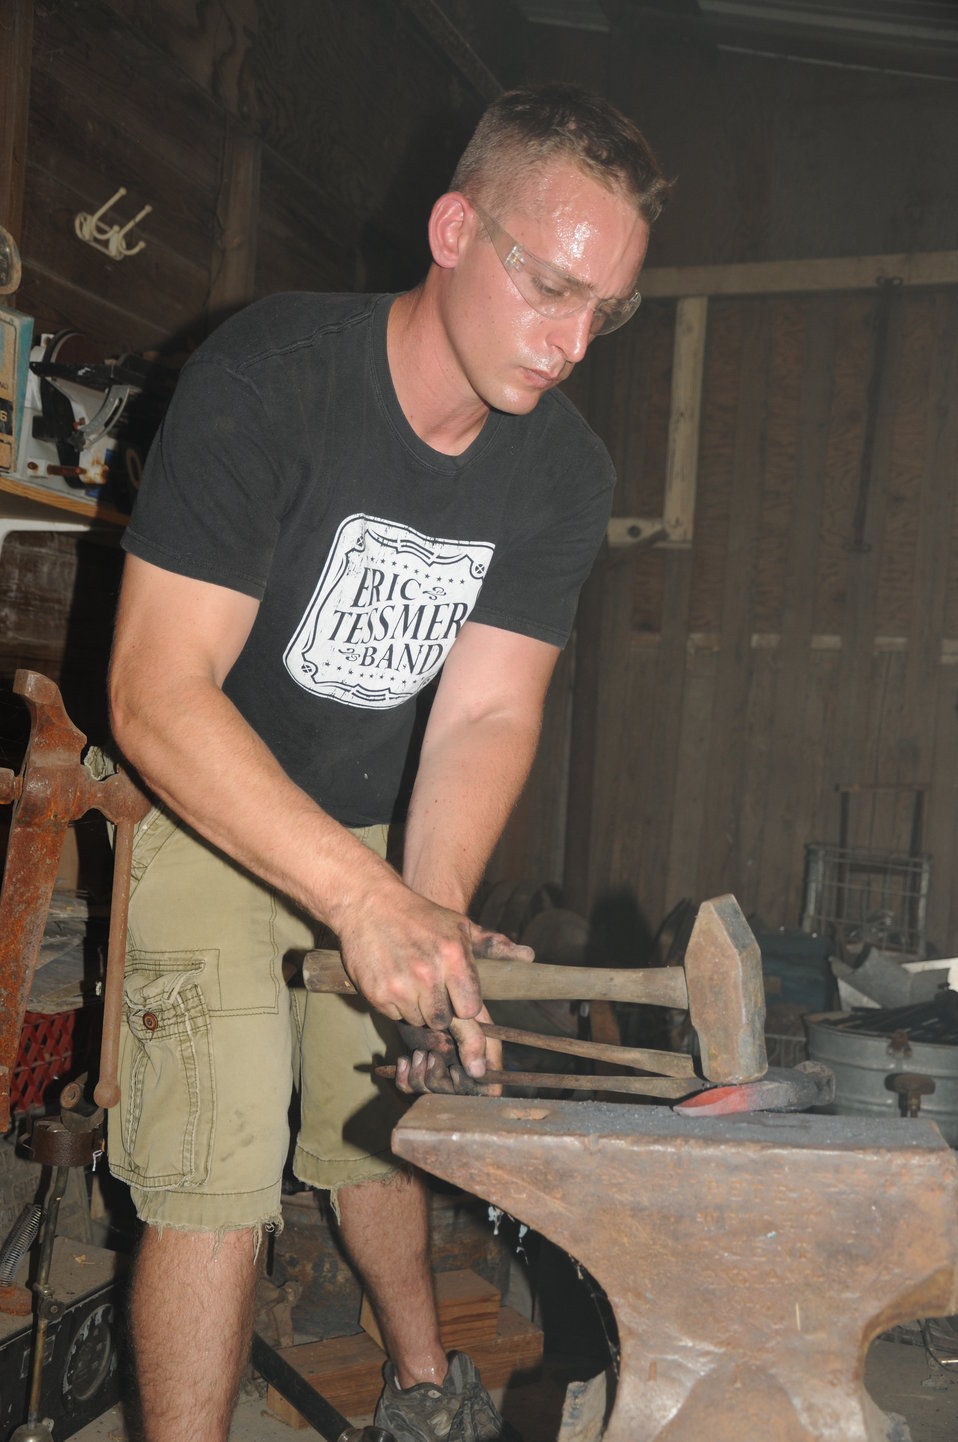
Forging lasting art

Staff Sgt. Grant Dupill, a medical technician in the 47th Medical Group, pounds a railroad spike on his blacksmith’s anvil.